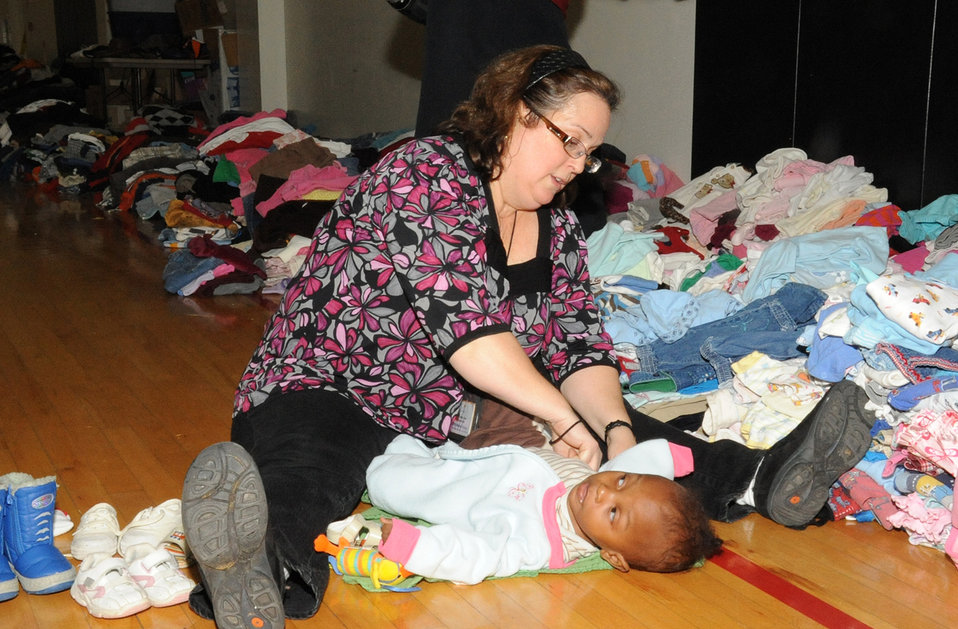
Haiti evacuees at JB MDL

JOINT BASE MCGUIRE-DIX-LAKEHURST, N.J. – Patricia Sims, 87th Medical Group Family Advocacy consultant, dresses a baby in warmer clothing at the McGuire Fitness Center shelter for evacuees from Haiti. The center also is equipped with cribs, toys and baby formula for those with small children.